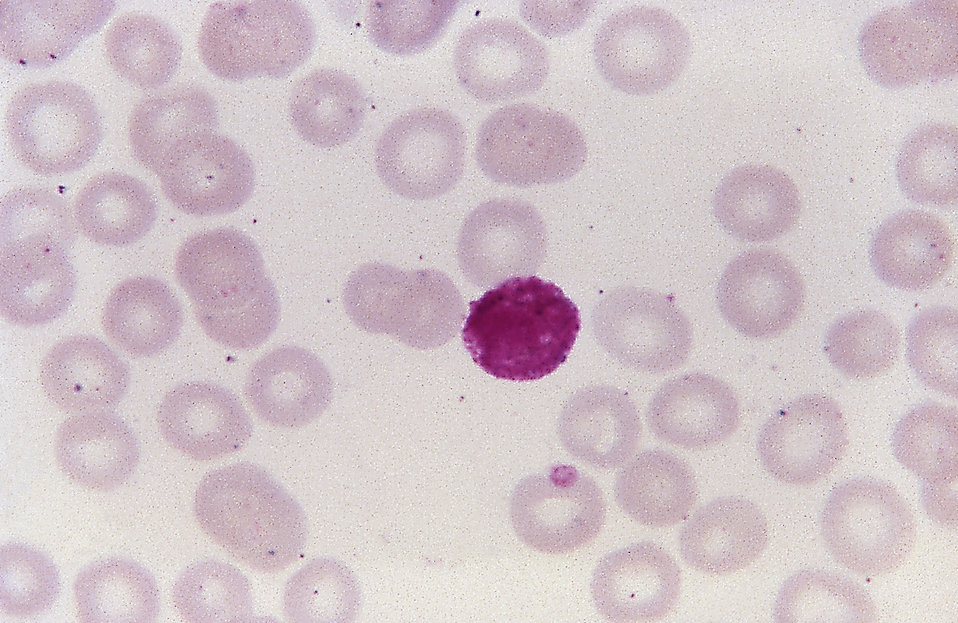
This thin film micrograph depicts an immature P. vivax reddish microgametocyte; Magnified 1125X.